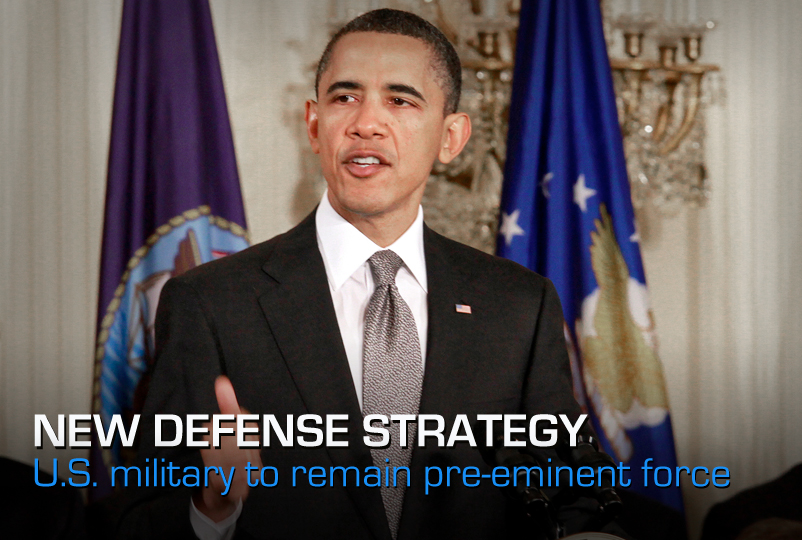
New Defense Strategy